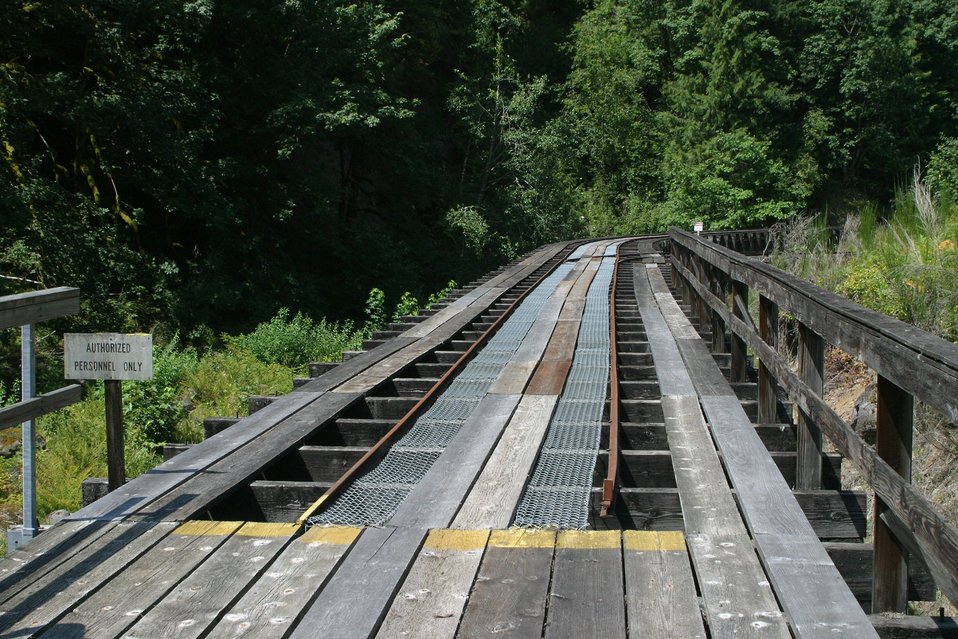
Flume delivers water from Little Sandy Dam to power facilities down stream. Little Sandy Dam is schedules to be remvoed in 2007.